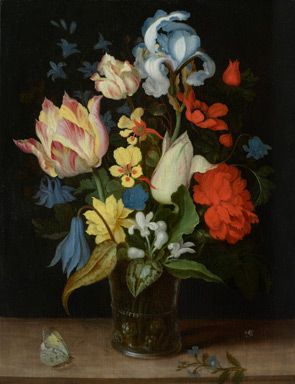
'Flowers in a Glass Vase on a Table with Butterfly' by Johannes van der Ast, oil on panel, 30.6 x 23 cm